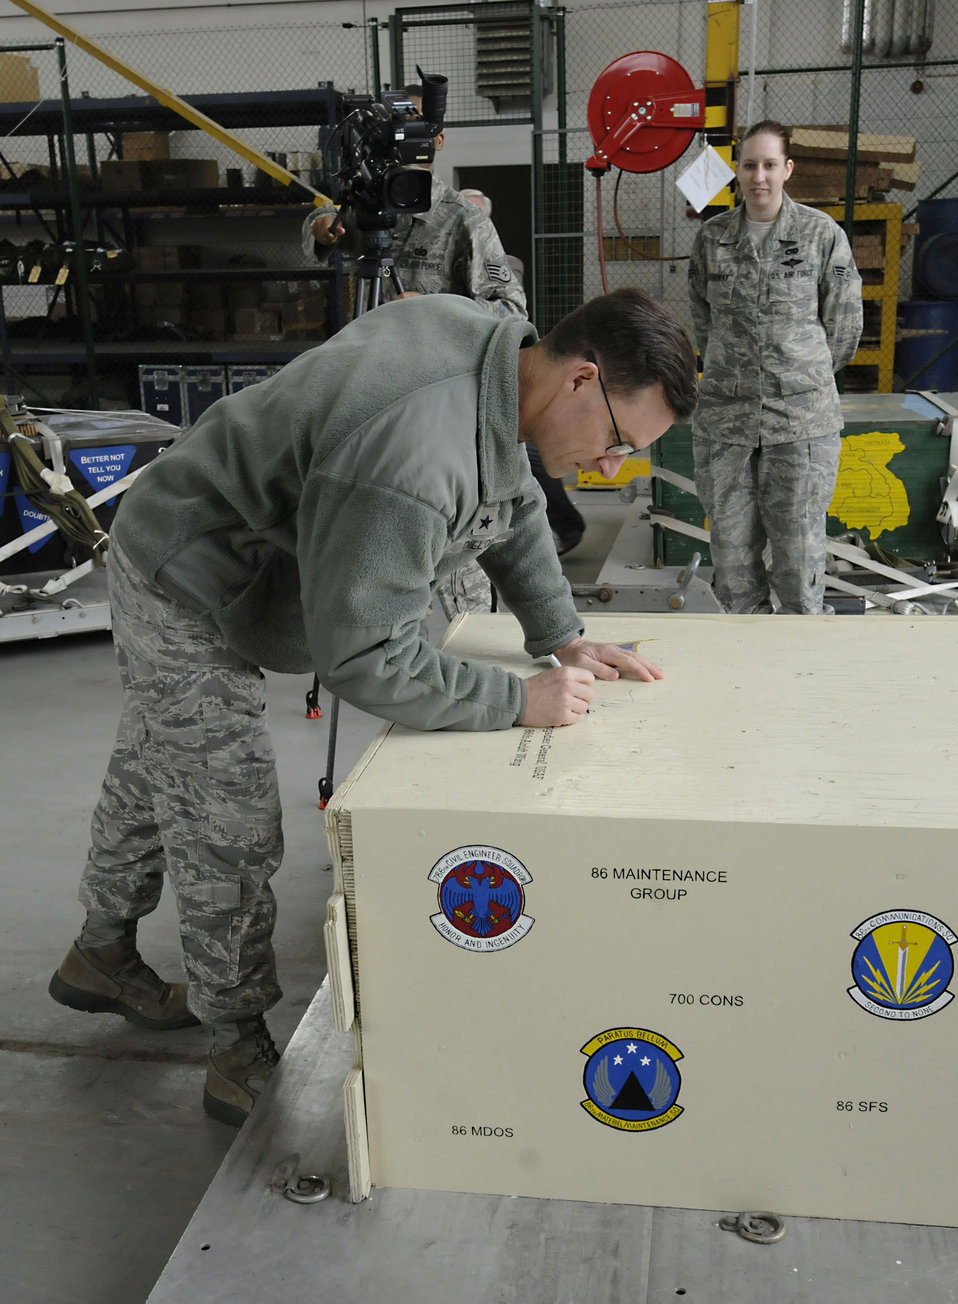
Commemorative heavy training platform

Brig. Gen. Mark C. Dillon signs a commemorative heavy training platform April 4, 2011, at Ramstein Air Base, Germany. The platform was designed by Senior Airman Sarah Hathaway, a parachute rigger assigned to the 86th Logistics Readiness Squadron, and will be used in heavy equipment airdrop training for members of the 37th Airlift Squadron. General Dillon is the 86th Airlift Wing commander.